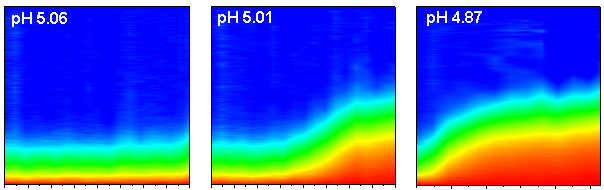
Nanoparticles; Environment; Instant Acid

Successive test runs at NIST show how clumping of typical nanoparticles in a solution depends on changes in acidity. Time after acidity jump is shown on the horizontal axis, while the vertical axis is a measure of the size of the nanoparticle aggregates. As pH goes down (and acidity up), both rate of aggregation and size of clumps of nanoparticles goes up.